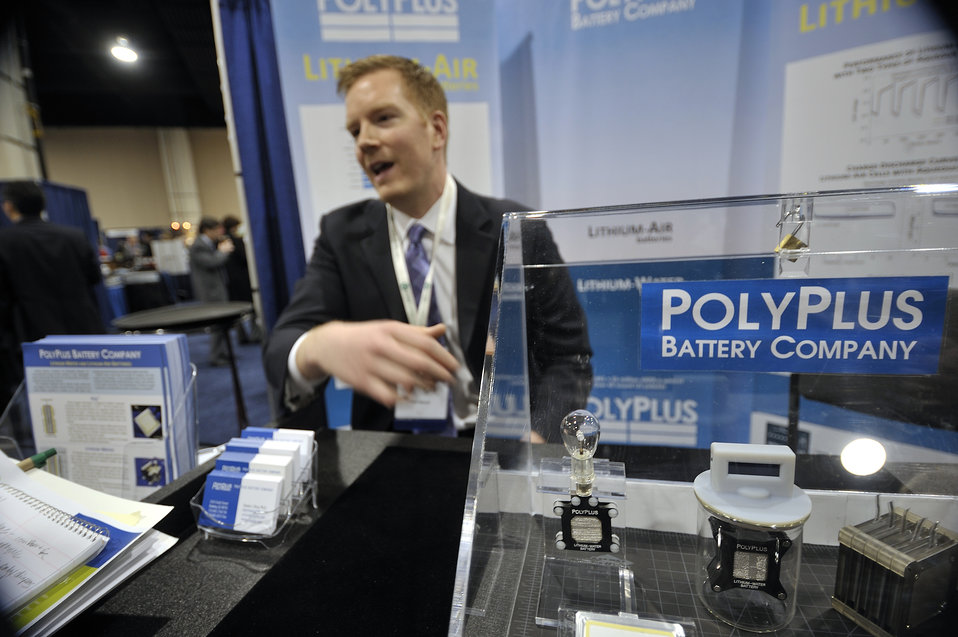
ARPA-E Energy Innovation Summit 2011, 45 of 83

Polyplus Battery Company booth at the Summit's Technology Showcase.